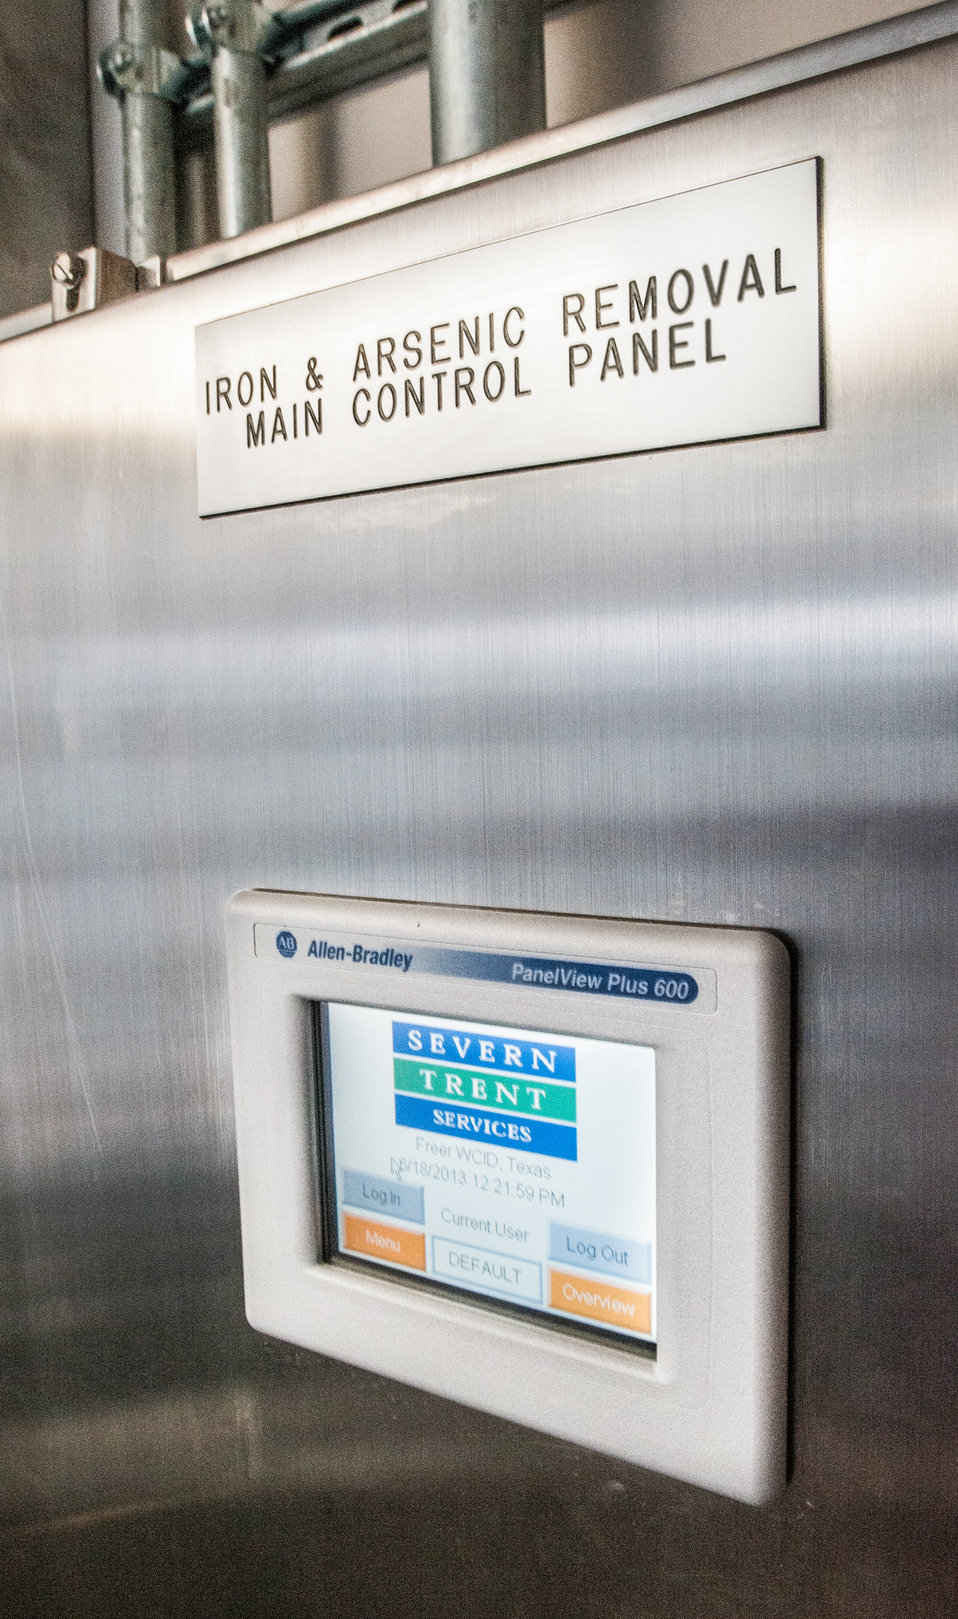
Iron and Arsenic Removal Main Control Panel at the Freer Water Control and Improvement District (FWCID) Arsenic Removal facility. FWCID benefits from the financial assistance of the U.S. Department of Agriculture (USDA) Rural Development (RD) to complete a two-phase approach to meeting the city’s water supply and safety needs, on Tuesday, June 18, 2013.

Although, the naturally occurring arsenic levels have remained constant for more than a century, the Environmental Protection Agency (EPA) safe level standards have established lower levels of arsenic to be safe for human consumption. To meet those levels FWCID approached USDA and was awarded a $986,000 loan for Phase I, to install two new water wells, each rated at 167 gallons per minute (creating a total of eight wells); 13,600 feet of well collection lines; and 15,000 linear feet of well control line to remotely control the well pumps and the 1,000,000 gallon holding tank at the well facility, which supplies water to the new Arsenic Removal System (Phase II). Previously, water was manually controlled by personnel who knew when and how long to manually opened and closed water valves or started well pumps to ensure holding tank levels were within operating levels during peek and slack times of the day. Phase II was a combination of a $1,832,000 loan and a $1,258,750 grant, which provided for the customized arsenic removal system, seen in these photos. The system includes a new 3,530 sp. ft. facility, on a .76-acre site, and houses the operations room, computer and power system, laboratory room, and pump systems. The entire operation can be monitored through a desktop computer interface system. The computer-controlled system ensures raw water is fed to the arsenic removal pump system, which works in sequence to maintain a constant pressure, when needed, to pump water through (blue) arsenic removal absorber vessels, and into ground storage tanks that feeds the residential and commercial needs of the city. Samples of water are periodically tested; and so far the arsenic levels have been below 1 part per billion (PPB), well under the 10 PPB limit.